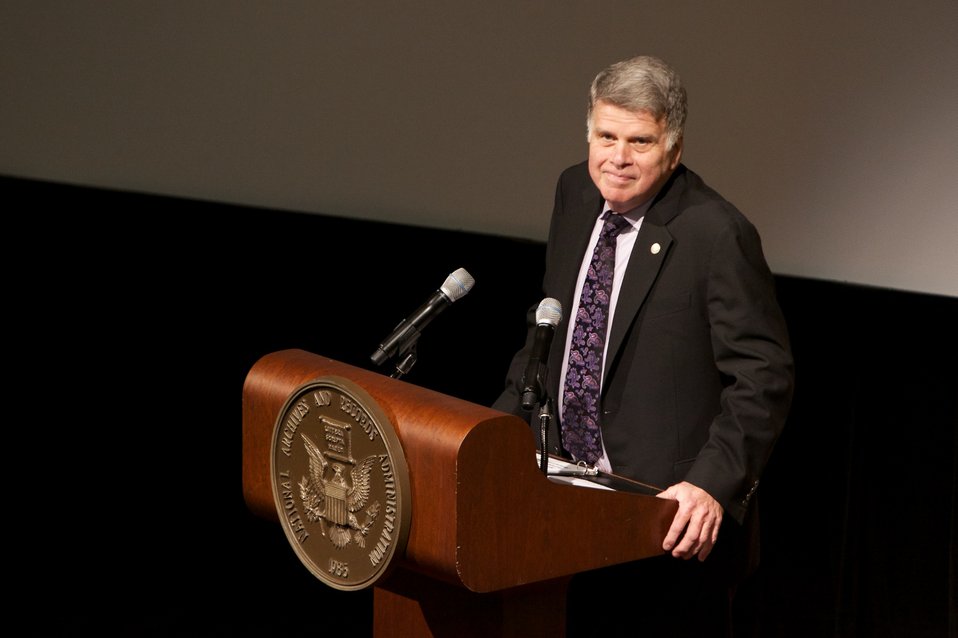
Monuments Men Public Screening; David S. Ferriero, Archivist of the United States, introduces the program